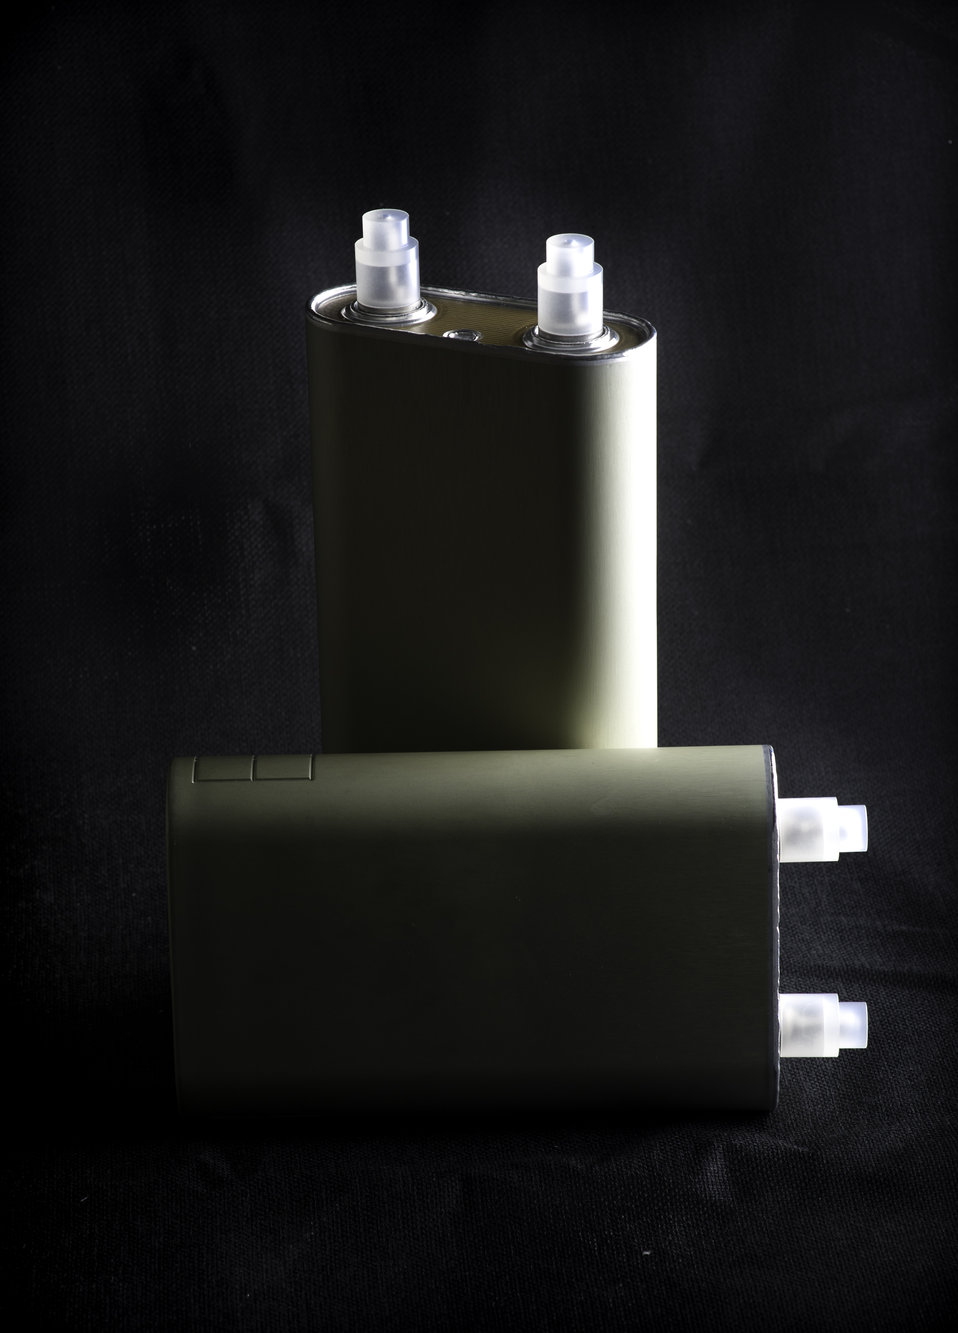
Battery modules being tested at the Thermal Test Facility at the National Renewable Energy Laboratory.